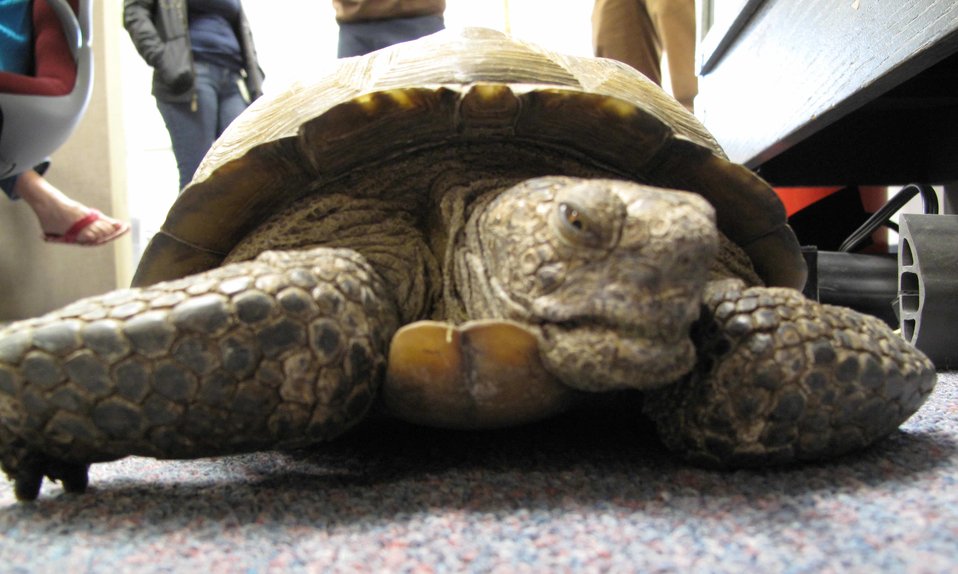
Crush the Desert Tortoise